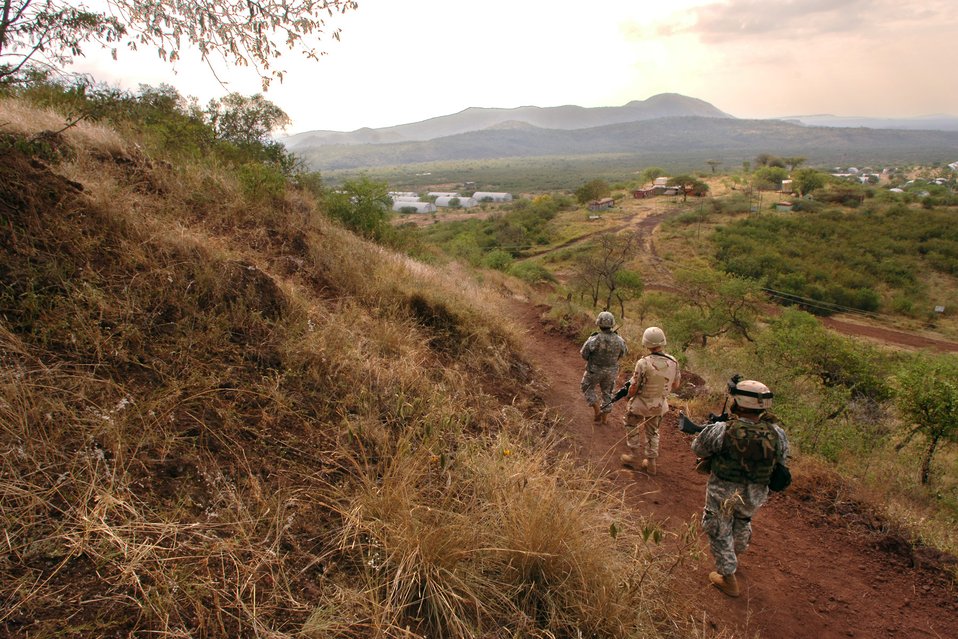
Combined Joint Task Force-Horn of Africa

Airman 1st Class Steven Brumley, middle, takes part in a two-mile hike with Guam Army National Guardsmen Specialists Albert Samana and Manno Raigelig as part of a weekly fitness regiment. All are deployed to Contingency Operating Location Bilate, Ethiopia.